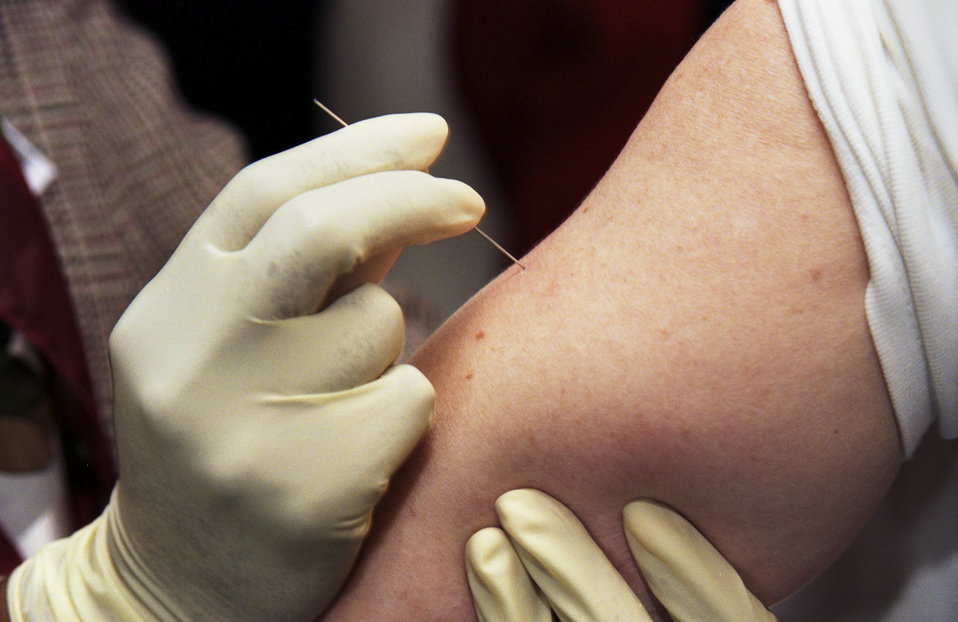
CDC Clinician demonstrates the use of a bifurcated needle during the 2002 Smallpox Vaccinator Workshop.